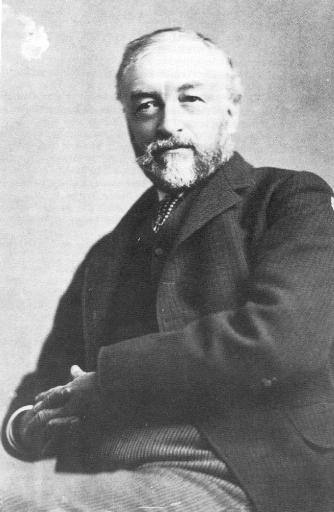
Samuel Pierpont Langley

Samuel P. Langley never held a military rank, nor piloted even a civilian airplane. Even though he was one of the pioneers of flight in America, Langley never saw his dreams fulfilled. He's remembered as one of the most unlucky trail blazers in flight history.